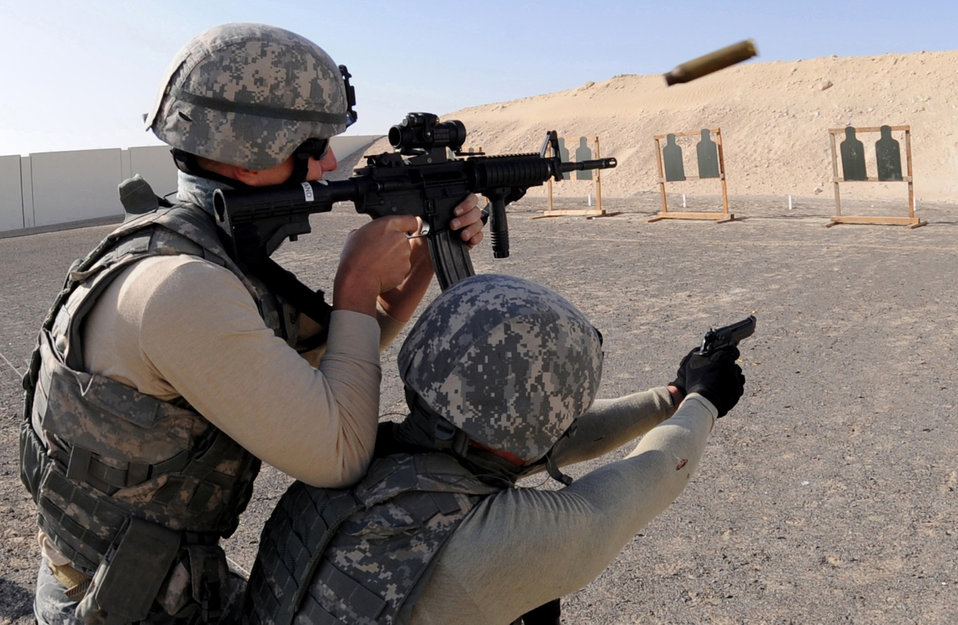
In the crosshairs

Security forces Airmen fire at targets Mar. 4, 2011, at a firing range in Southwest Asia.